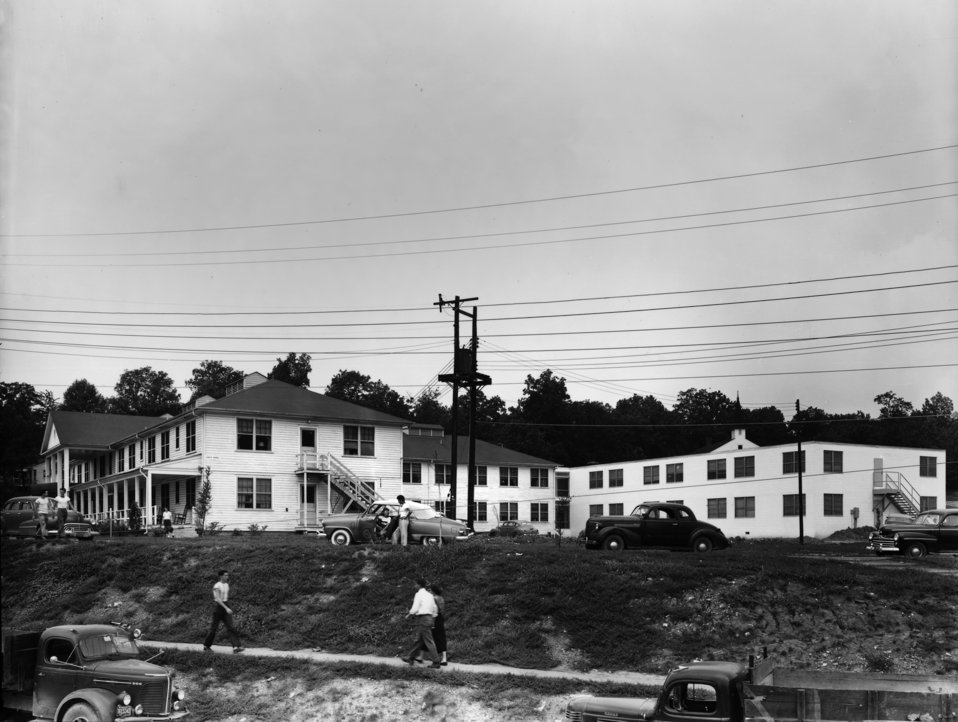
New Addition to Guest House Oak Ridge

ORO5690 DOE photo by Ed Westcott 8-19-1949 Oak Ridge Tennessee